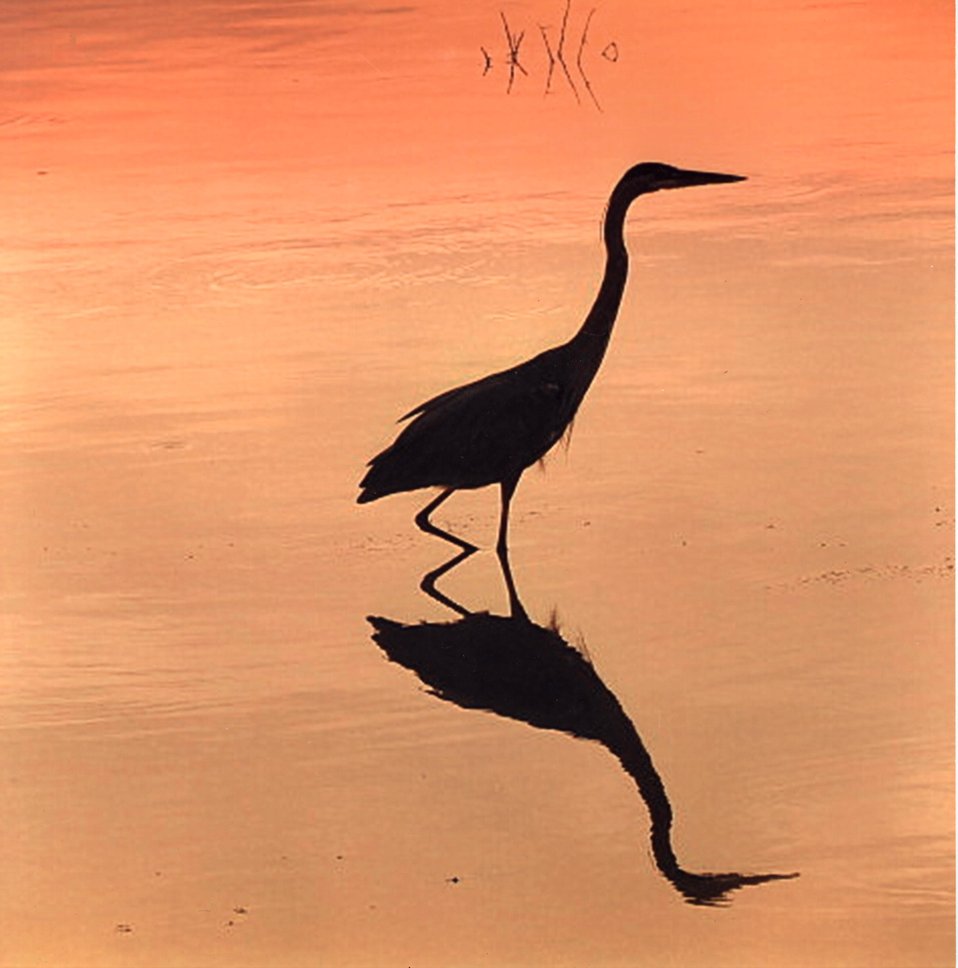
Egret Sunset

Photo by Mekayla Kelly/USFWS.

Shiawassee National Wildlife Refuge 2013 Photo Contest
Youth Category - Age 14